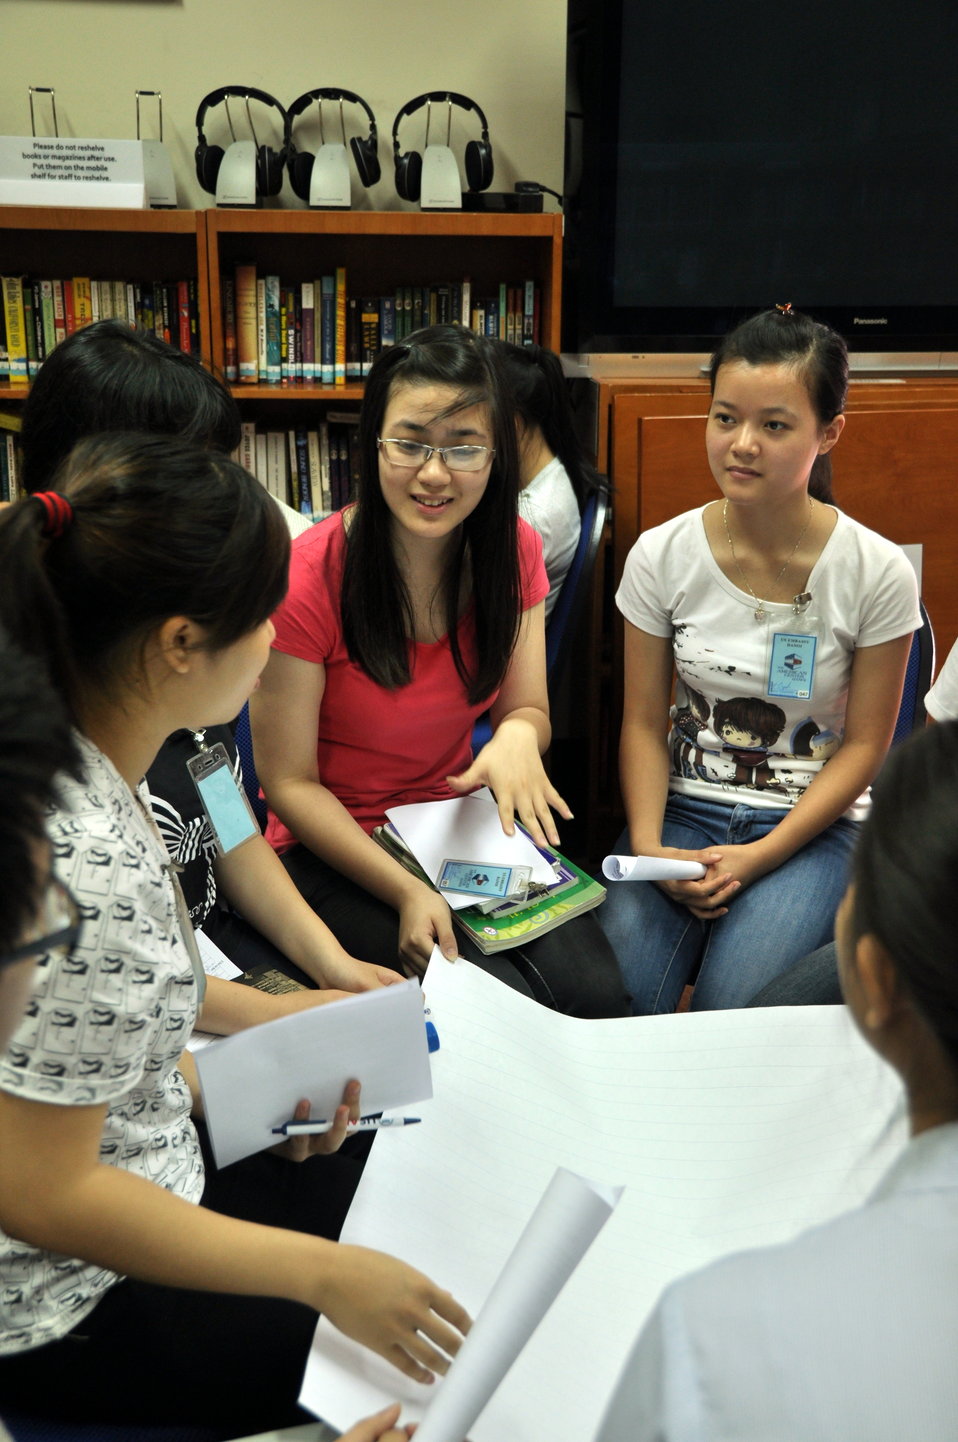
Climate Change Talk at the American Center

Hanoi, May 28, 2013.